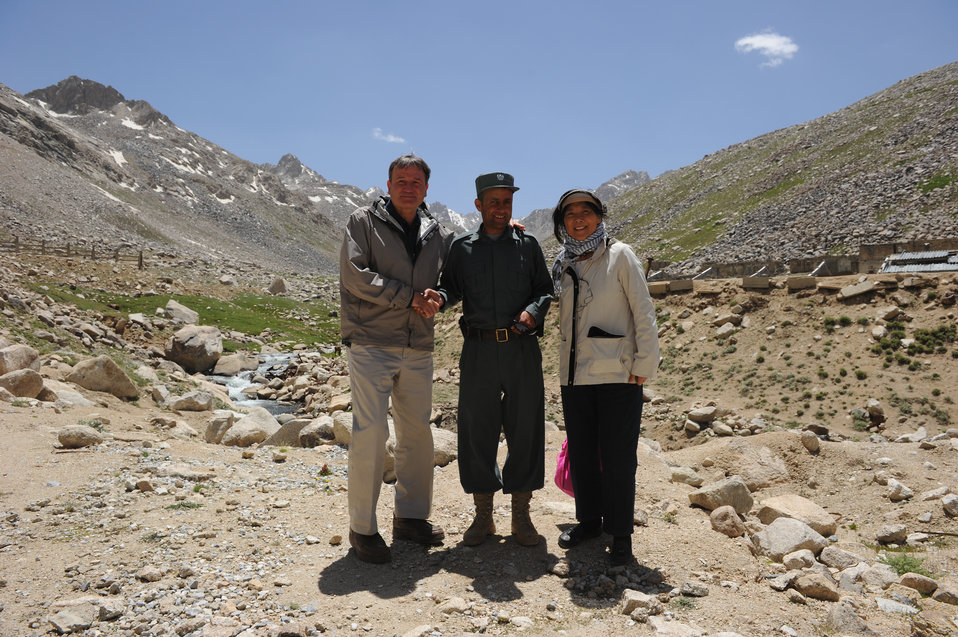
U.S. Ambassador Karl W. Eikenberry and his wife Ching pose with an Afghan policeman near the North end of the Salang Tunnel on the border of Parwan and Baghlan Provinces, Afghanistan, on Wednesday, June 15, 2011. (S.K.Vemmer/Department of State)